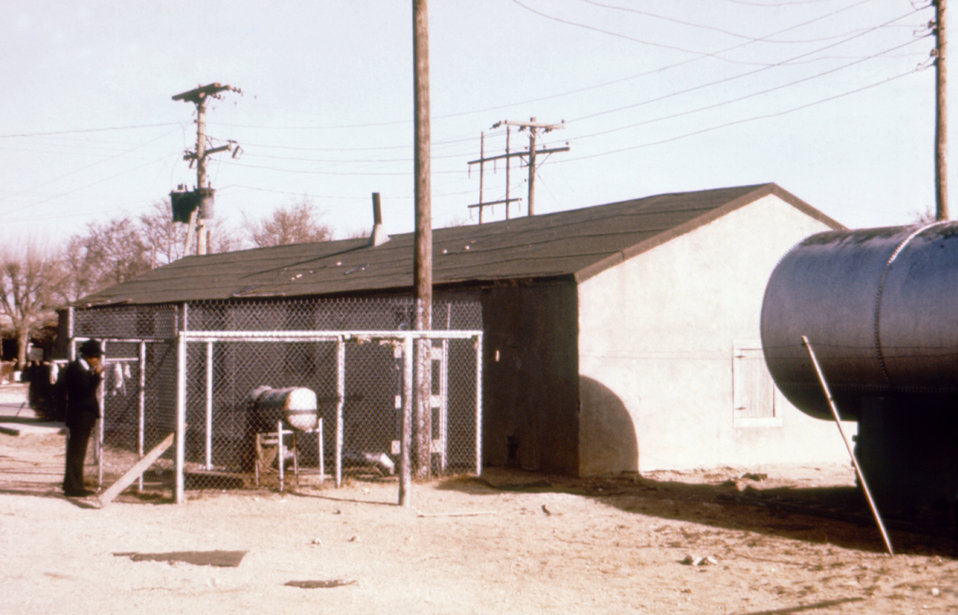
This 1975 photograph shows a well, a pump, and a large pressure tank on the grounds of a migrant labor camp.